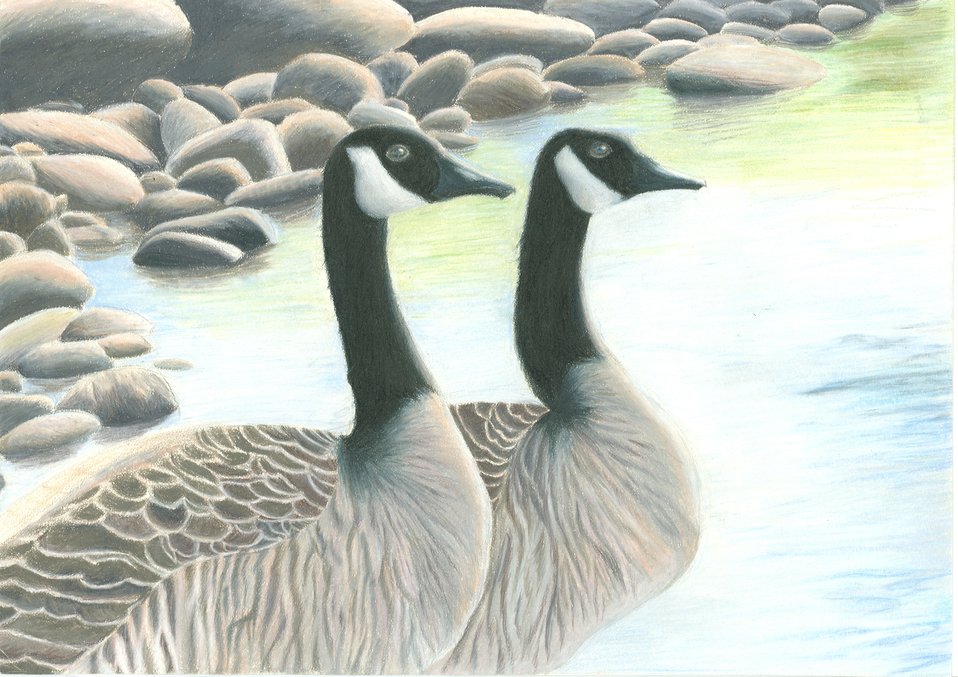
Arizona

2012 Jr Duck Stamp Program
State Best of Show
Arizona